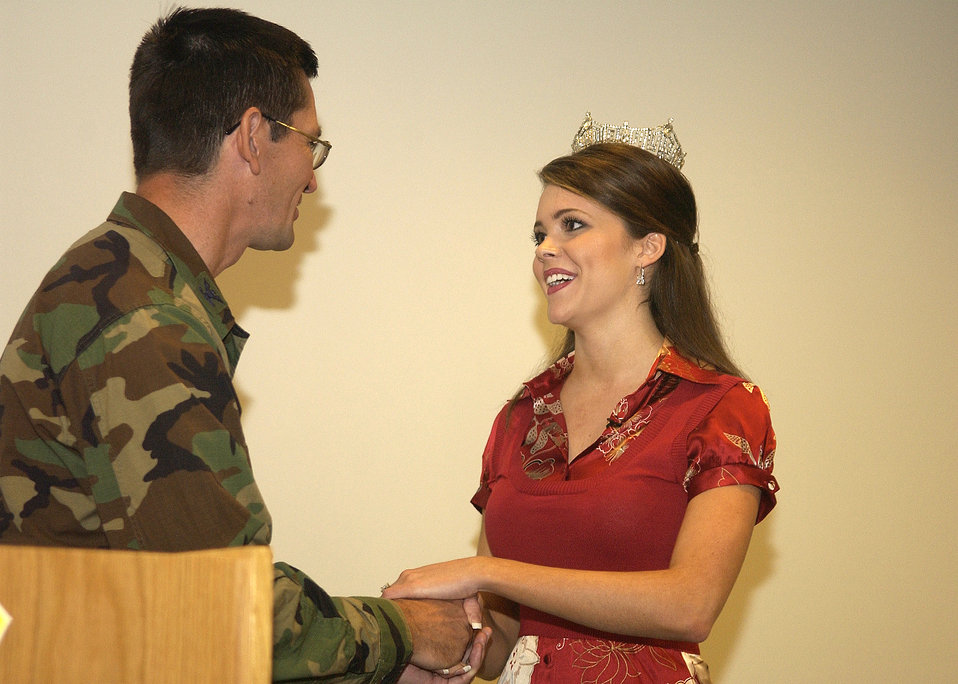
Miss America shares message during base visit

Miss America Jennifer Berry greets Col. Joseph Schwarz during her visit to Los Angeles Air Force Base, Calif., Sept. 12. Colonel Schwarz is commander of the 61st Air Base Wing.